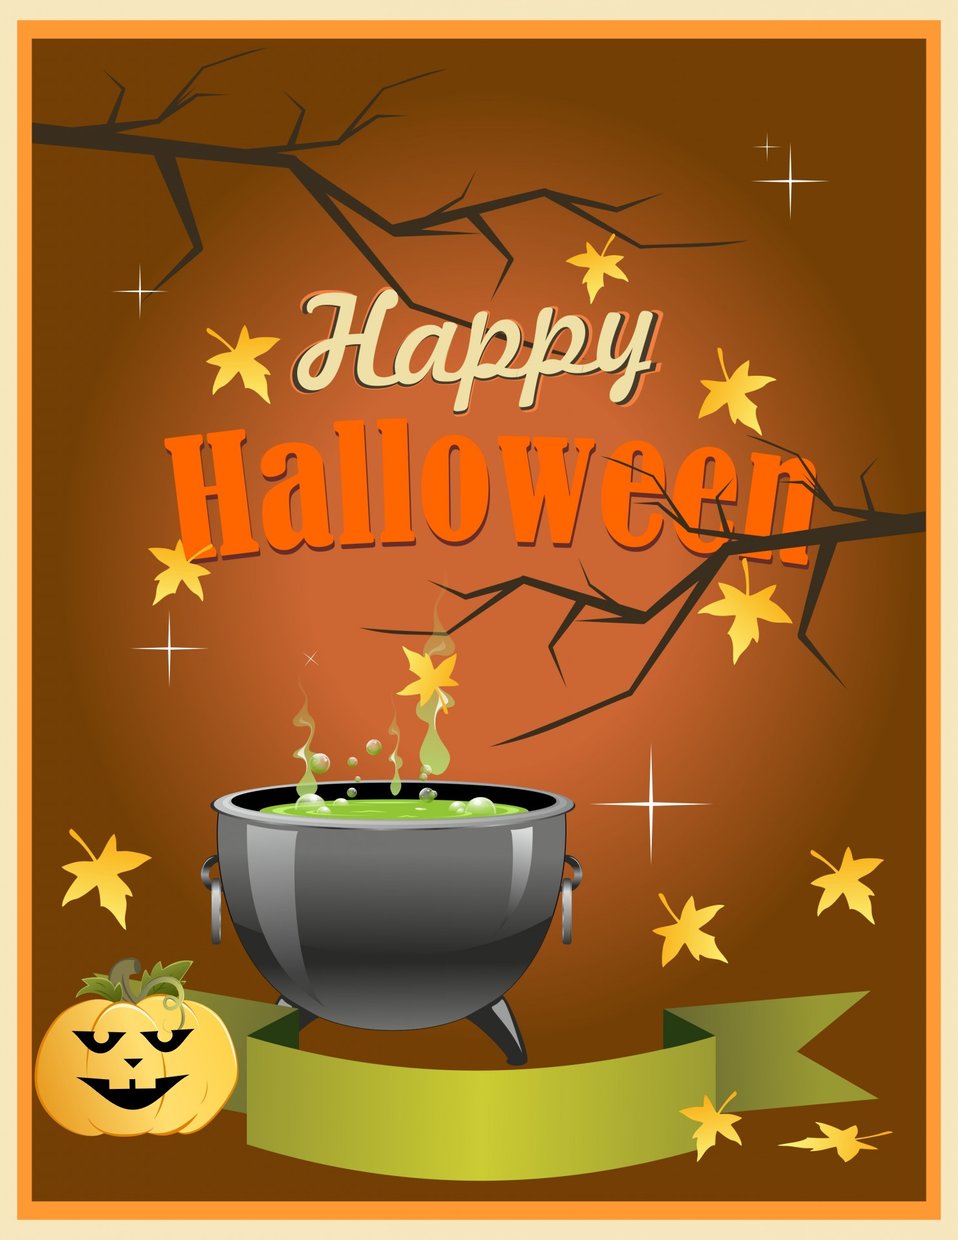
Happy halloween

Card for the holiday halloween.